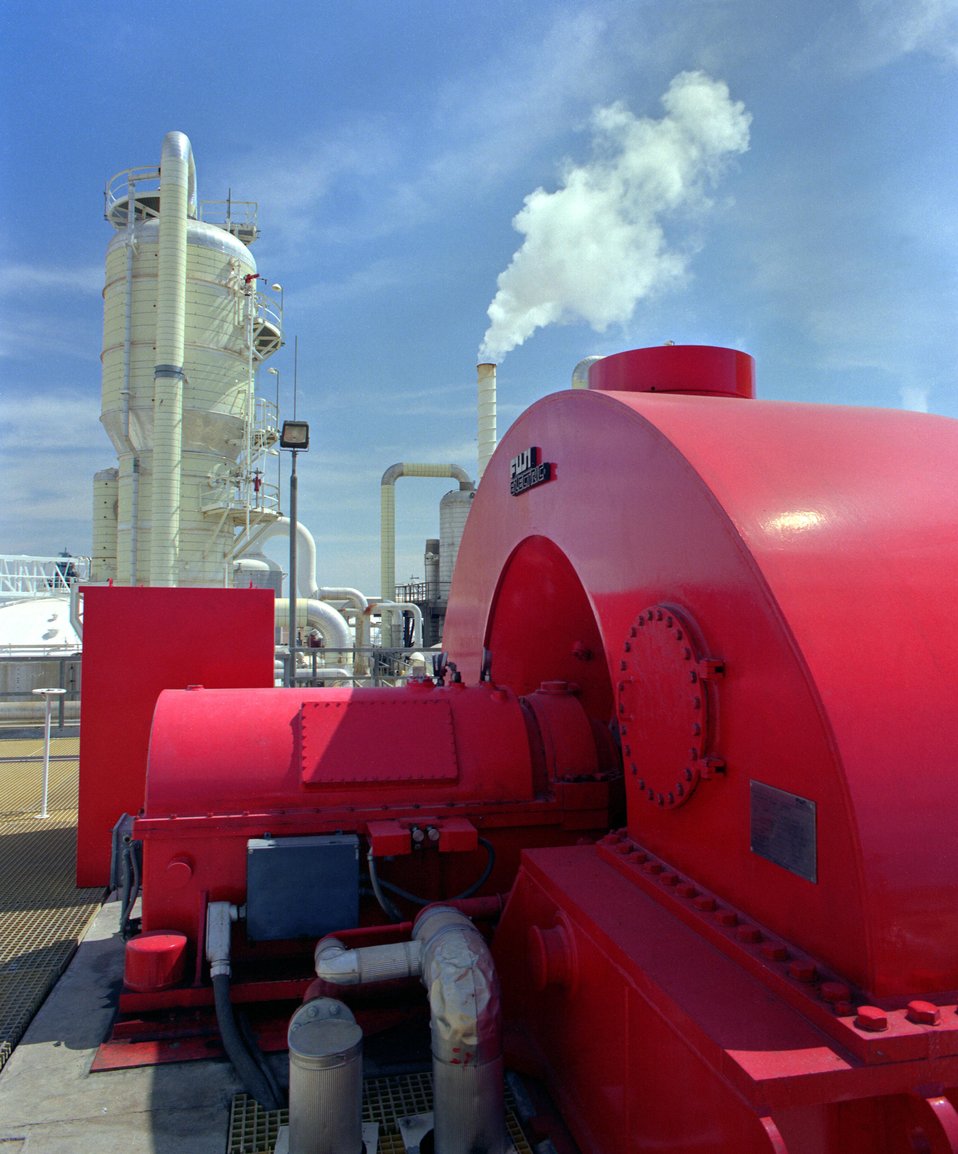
A GENERATOR AT THE LEATHERS GEOTHERMAL POWER PLANT, IMPERIAL COUNTY, CALIFORNIA.

THE LEATHERS GEOTHERMAL POWER PLANT IS LOCATED IN THE SALTON SEA GEOTHERMAL RESOURCE AREA NEAR SAN DIEGO, CALIFORNIA. IT IS PART OF THE IMPERIAL VALLEY PARTNERSHIP PROJECT, UNDER CONTRACT TO SELL POWER TO SOUTHERN CALIFORNIA EDISON CO.